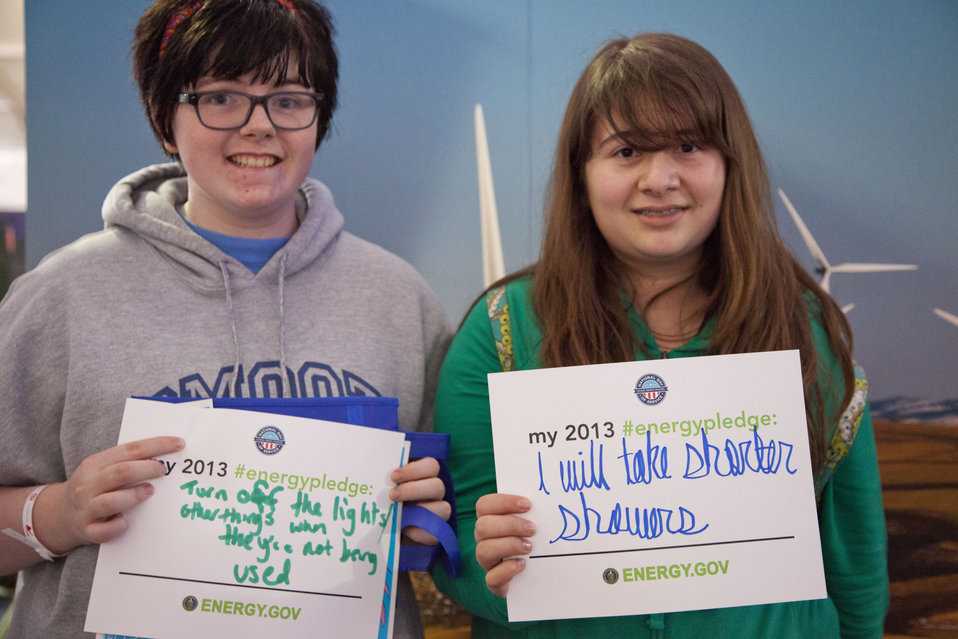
What's your #energypledge?